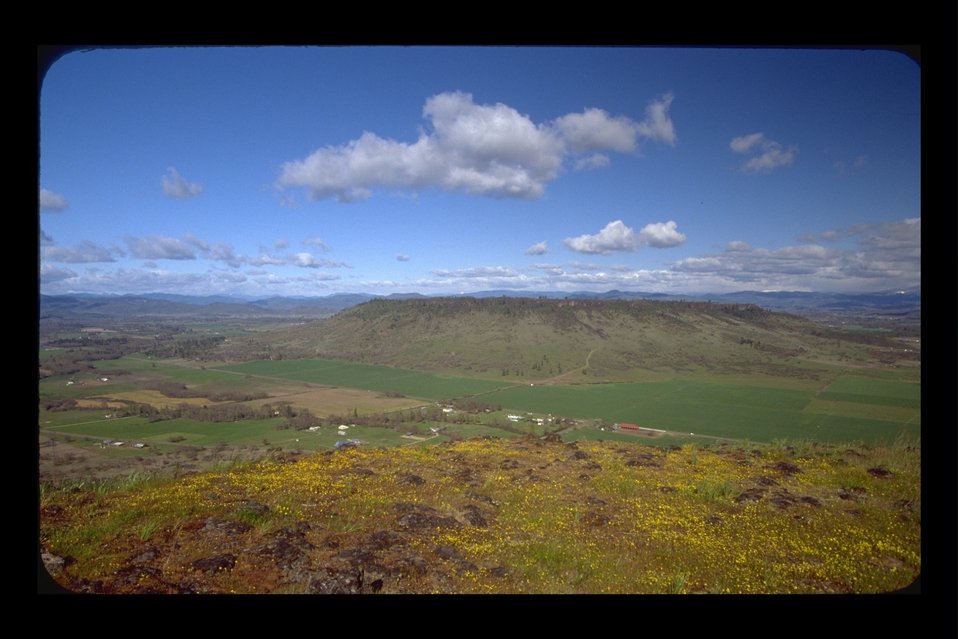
View of Upper Table Rock from Lower Table Rock.